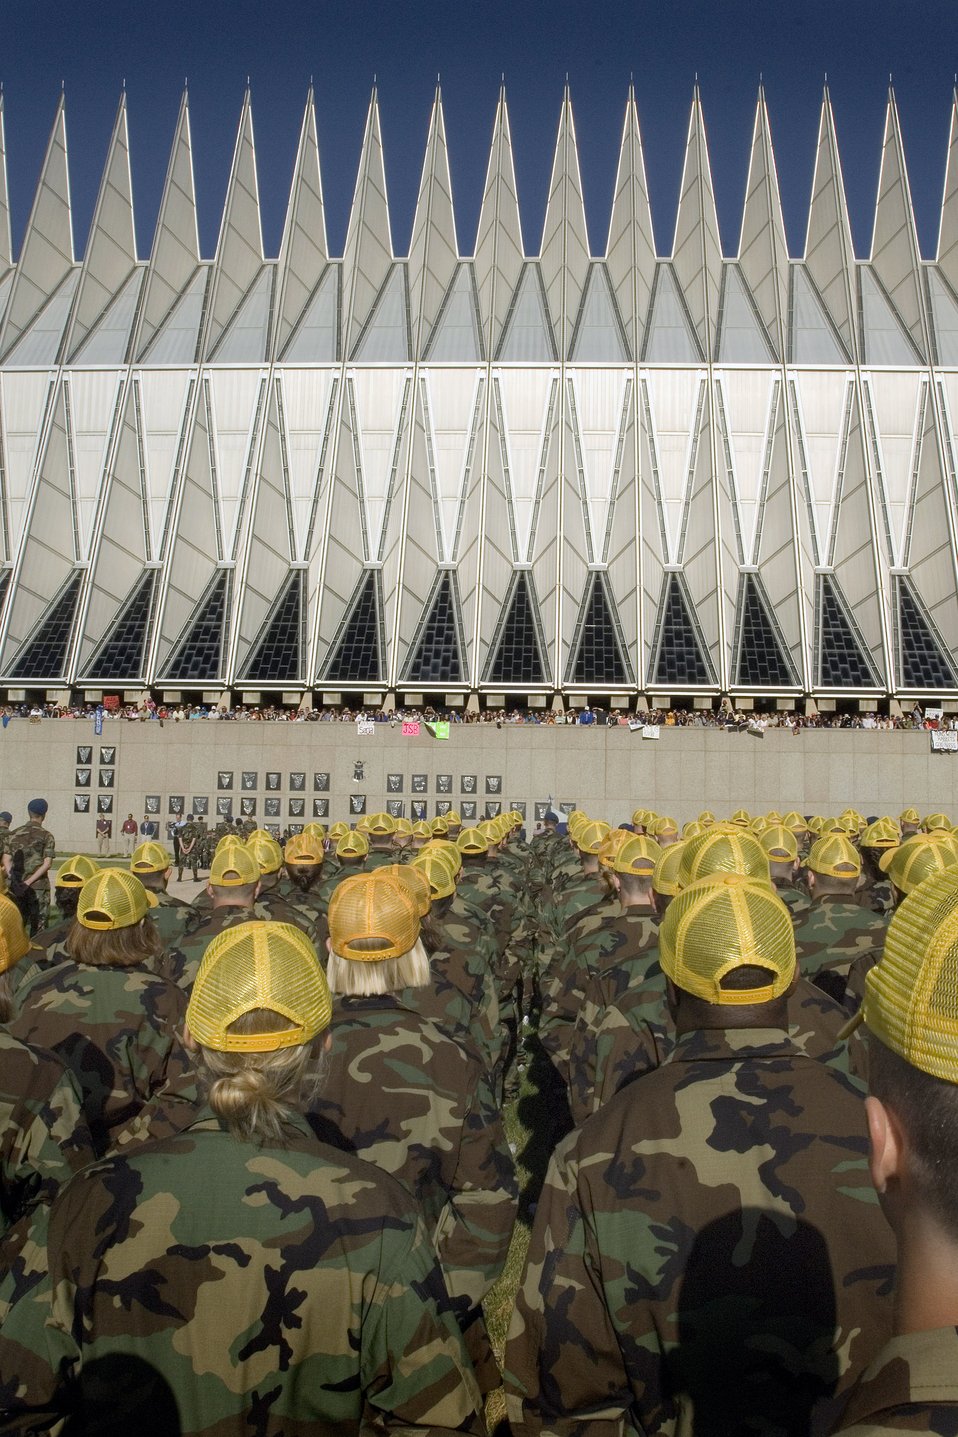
I, do solemnly swear ...

Basic cadets are formed up during the swearing-in ceremony as friends and family cheer on their loved ones June 29 at the U.S. Air Force Academy in Colorado. This ceremony marks the beginning of the first half of basic cadet training, commonly known as